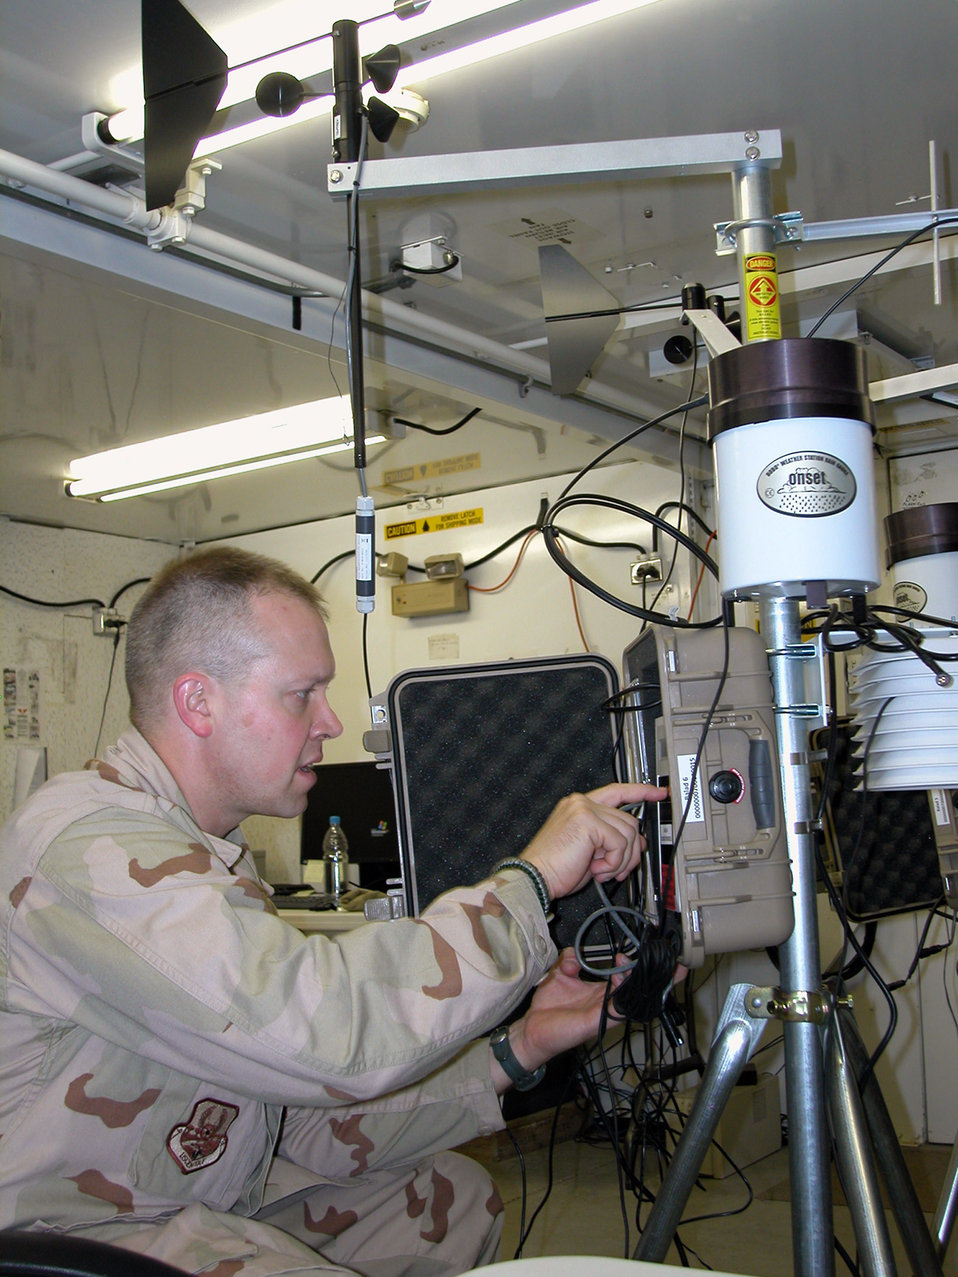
Biological team protects Balad Airmen from bioterrorism

Maj. Thomas Shaak makes adjustments to a Global Integrated Monitoring System May 11 at Balad Air Base, Iraq. The system puts a global viewer on the desktop of commanders providing them situational awareness for the real world and assisting them in documenting and protecting their people from chemical exposures. Major Shaak is assigned to the 332nd Expeditionary Medical Group's biological augmentation team.